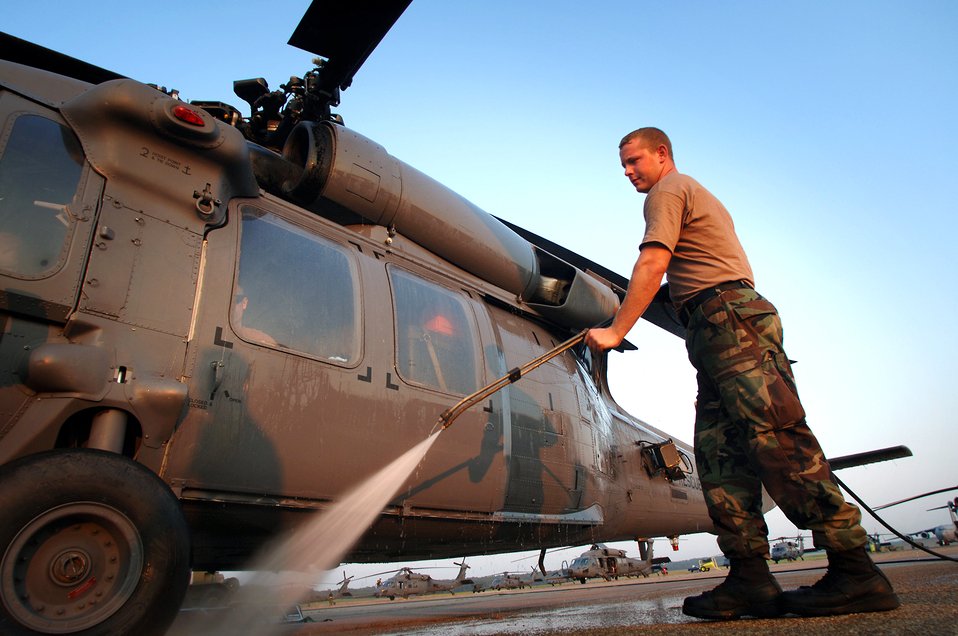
Hurrican relief mission

JACKSON, Miss. -- Staff Sgt. Jason Moore uses a pressure washer to hose off an HH-60G Pave Hawk after a search and rescue mission. Ground crews here wash the outside of helicopters with hot water and the inside with a mild bleach solution to decontaminate them after missions over